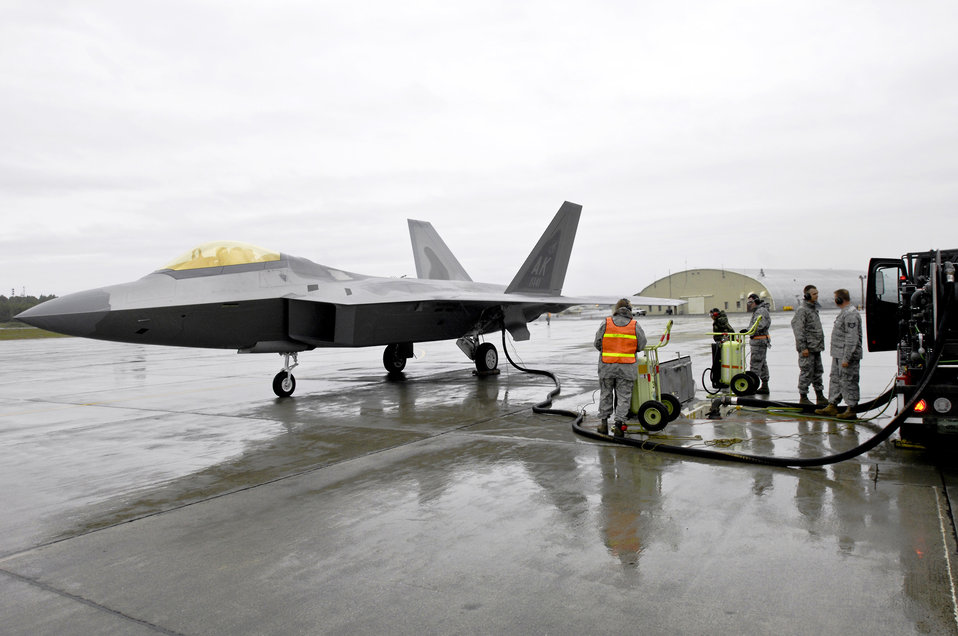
3rd Logistics Readiness Squadron refuels F-22 Raptor

Members of the 3rd Logistics Readiness Squadron ensure an F-22 Raptor is refueled properly during a hot pit refuel Sept. 1, 2009, at Elmendorf Air Force Base, Alaska. During hot pit refuels, the pilot pulls the aircraft up to the area without shutting down the engines and the plane is quickly refueled and can immediately take off.